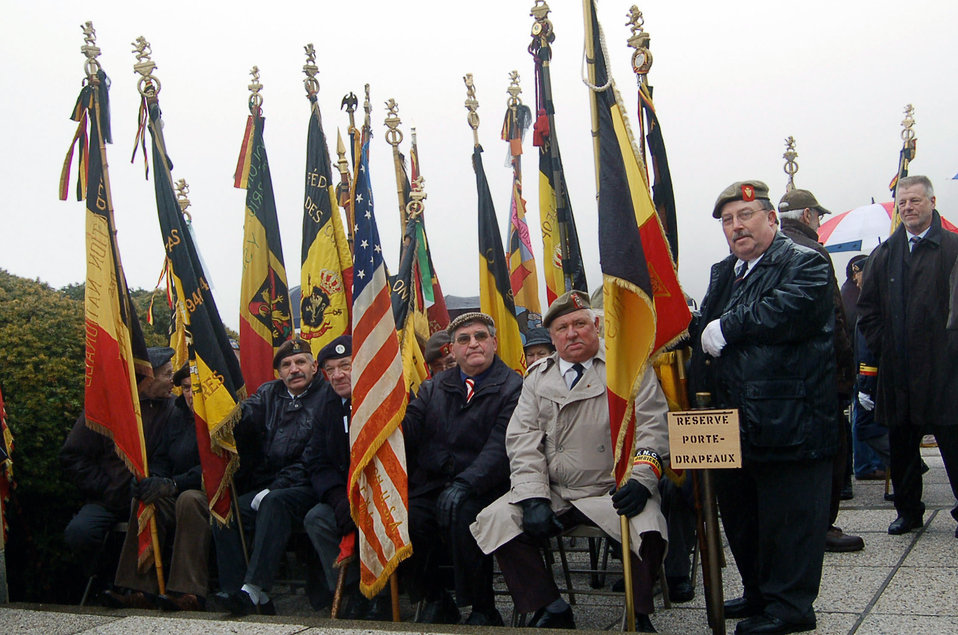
World War II MIAs recovered in Germany

Belgian nationals hold Belgian flags during a ceremony Feb. 20 at the Henri-Chapelle Cemetery and Memorial in Belgium. The event, which honored nine Airmen with the McMurray Crew in the 492nd Bombardment Group during World War II, drew international interest.